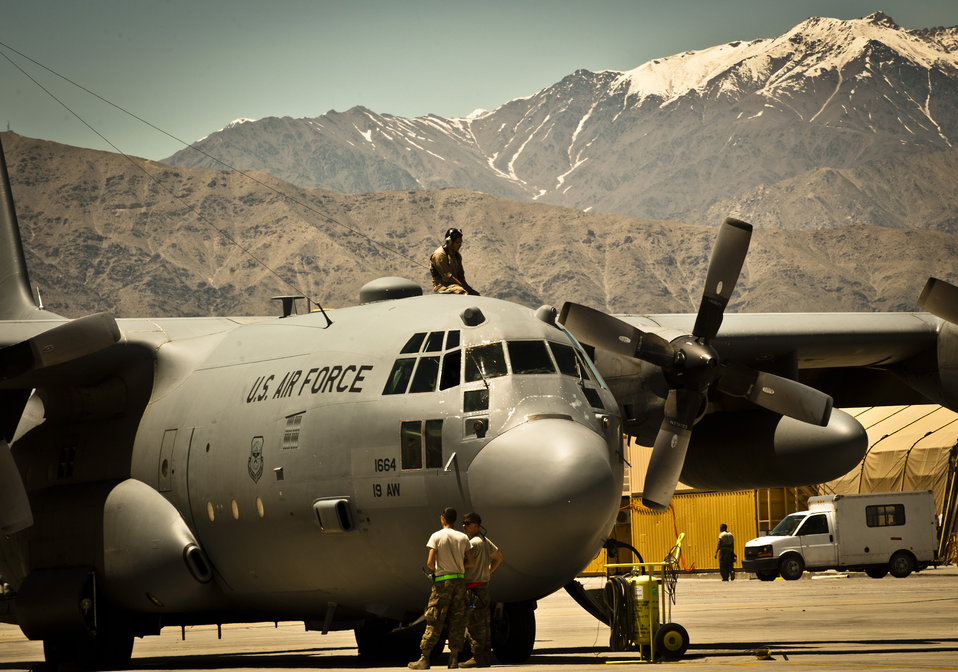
Hercules: A day in the life

Airmen with the 455th Air Expeditionary Wing prepare a U.S. Air Force C-130H Hercules assigned to the 774th Expeditionary Airlift Squadron for an airlift mission at Bagram Airfield, Afghanistan, June 2, 2012. Bagram provides tactical airlift support every day to ground forces operating in Afghanistan.